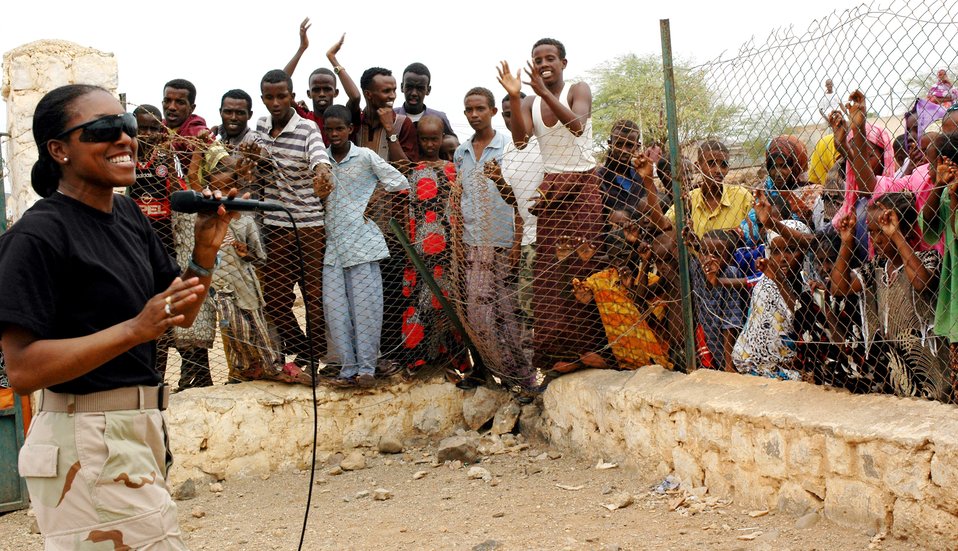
Rock band reaches out to Djiboutian villages

U.S. Central Command Air Forces band member Master Sgt. Erika Stevens sings to a crowd in the village of Hol Hol, Djibouti, Aug. 9 during the band's Africa tour.